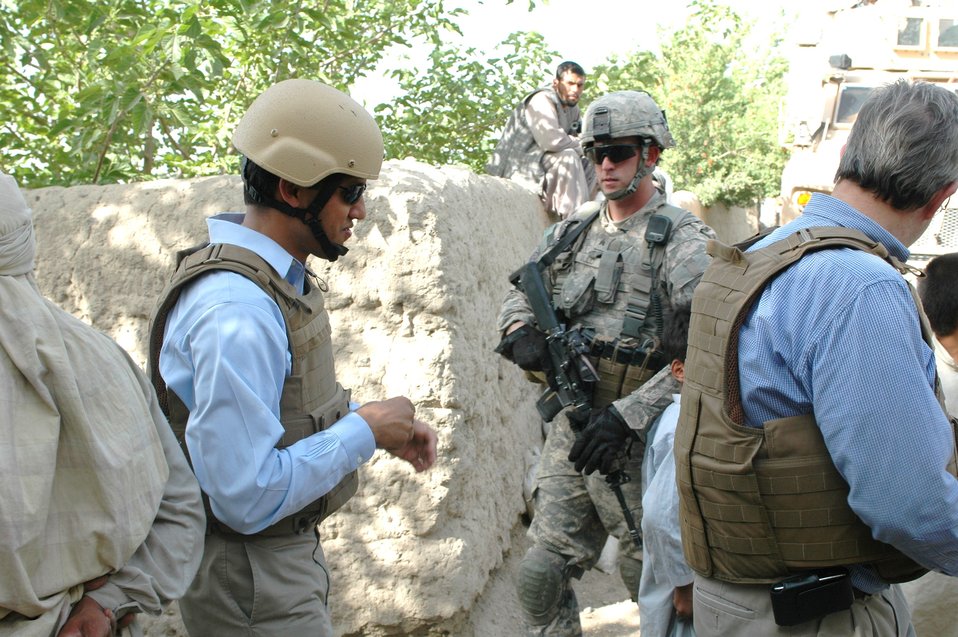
Dr Shah Visits Argandab April 10, 2010